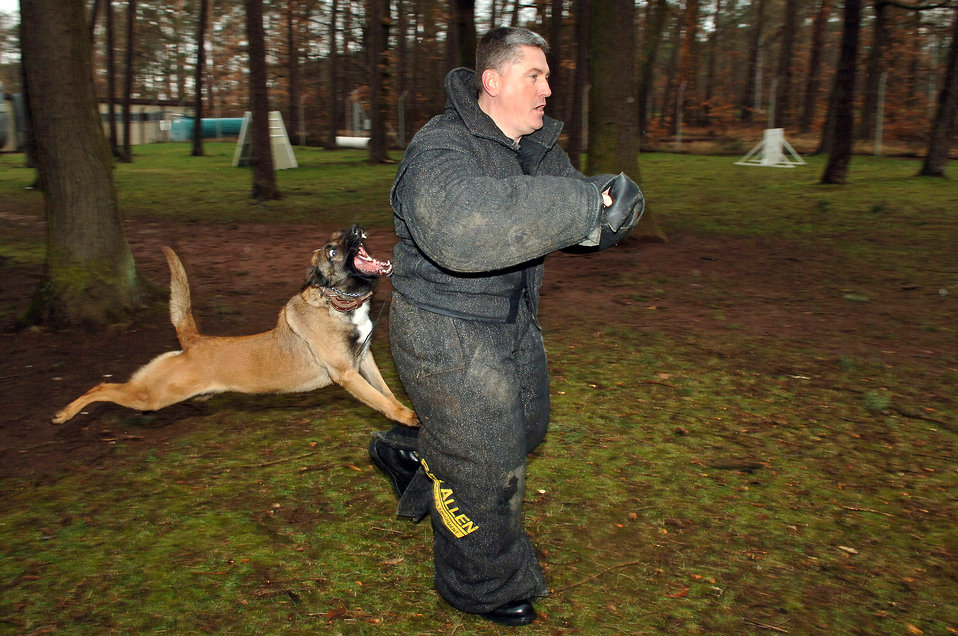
Training to take a bite out of crime

Senior Master Sgt. Robin McNatt tries to avoid a military working dog during a training session at Ramstein Air Base, Germany. Sergeant McNatt is First Sergeant for the 435th Security Forces Squadron.